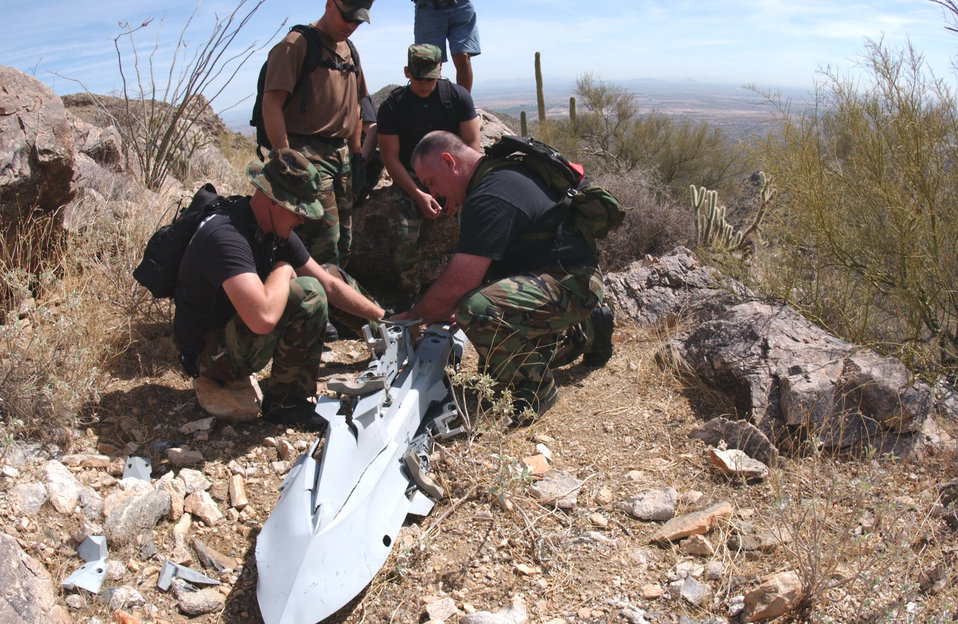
Hiker finds F-16 rack

Airmen with the 56th Civil Engineer Squadron explosive ordnance disposal unit and the 56th Equipment Maintenance Squadron at Luke Air Force Base, Ariz., examine an F-16 Fighting Falcon triple ejector rack in the White Tank Mountains on Thursday, March 23, 2006. The Airmen were ensuring the rack didn't contain unexploded cartridges. The rack was released from a 61st Fighter Squadron F-16 during an in-flight emergency on Aug. 11, 2003. A local resident found the item while hiking and led the Air Force team to the site.